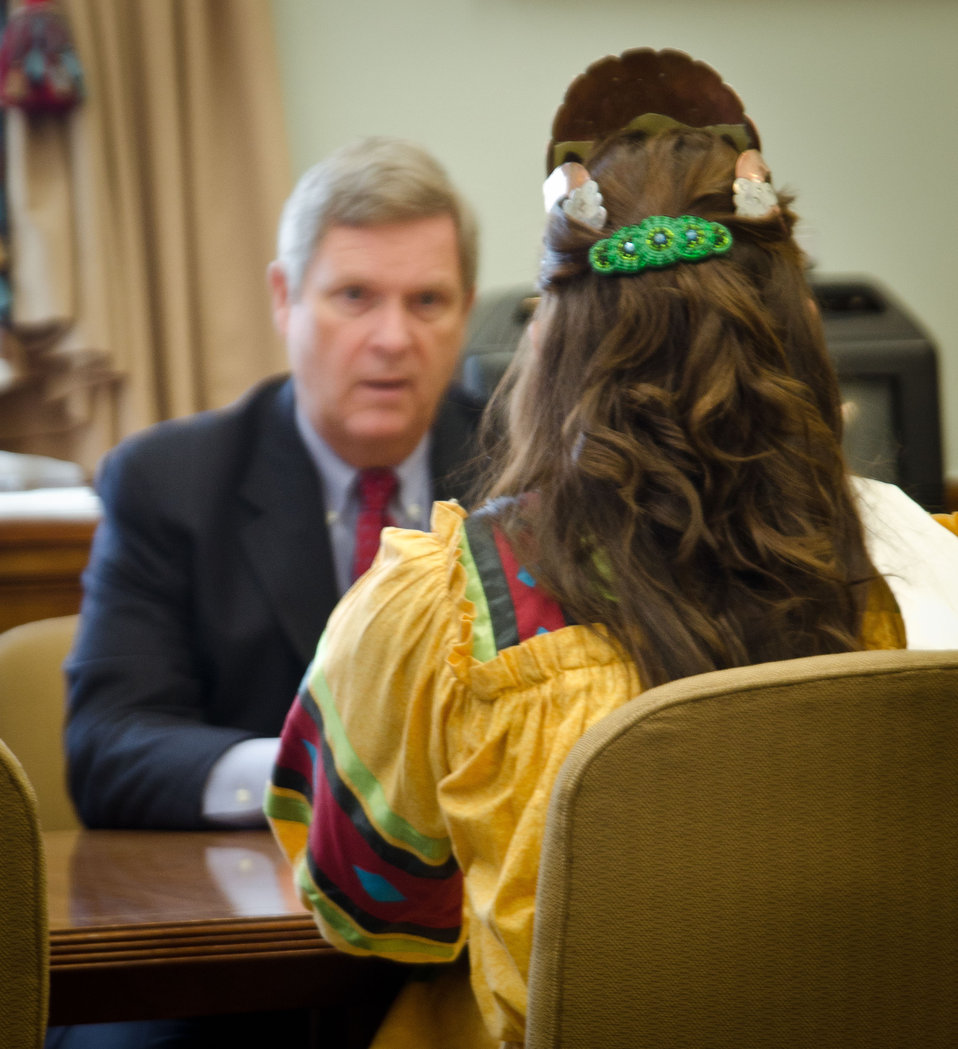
Miss Cherokee 2010-2011 Brooke Hudson (right) of the Cherokee nation meets with U.S. Department of Agriculture Secretary Tom Vilsack (eft) in Washington, DC, on Tuesday, August 9, 2011. During the meeting Miss Hudson presented Secretary Vilsack with a book that told of the 'Trails of Tears,' the relocation that included the movement of the Cherokee Nation in 1938 from the southeastern United States to Oklahoma. Hudson had completed a cycling journey along the same route. The trip took her more then 20 days to complete. She told of how the experience was both physically and emotionally demanding.